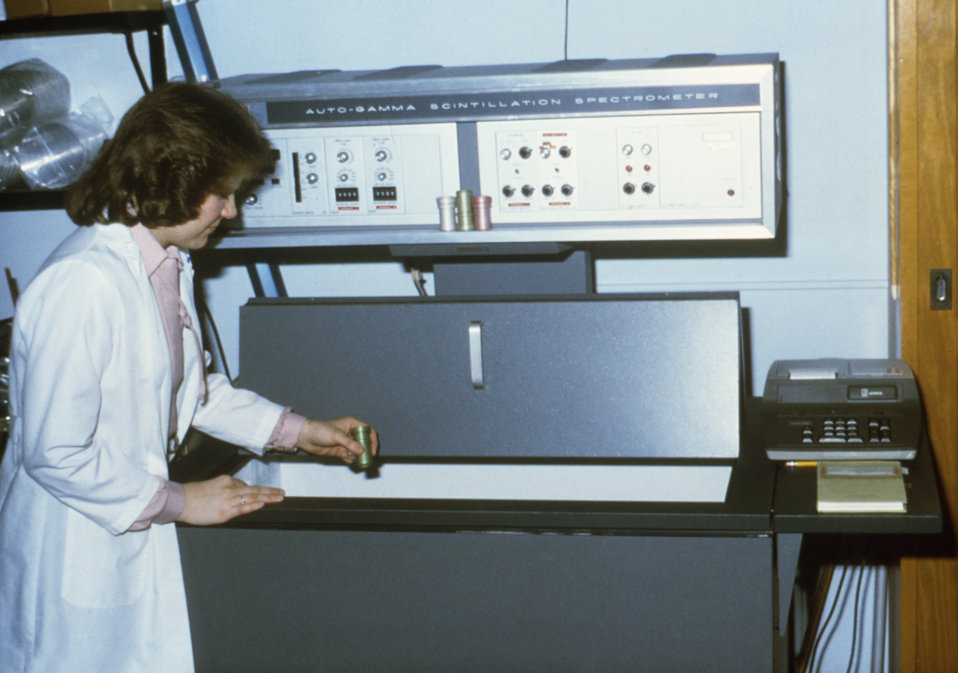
This photograph shows laboratorian Maryanne Nave using an older model liquid scintillation counter in a CDC laboratory.